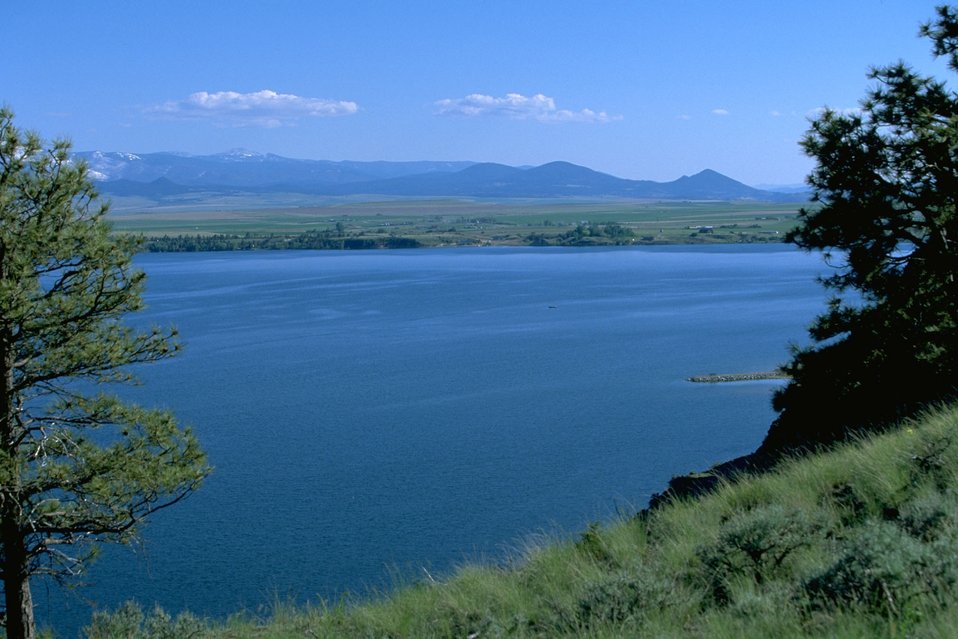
Scenic view of Hauser Lake